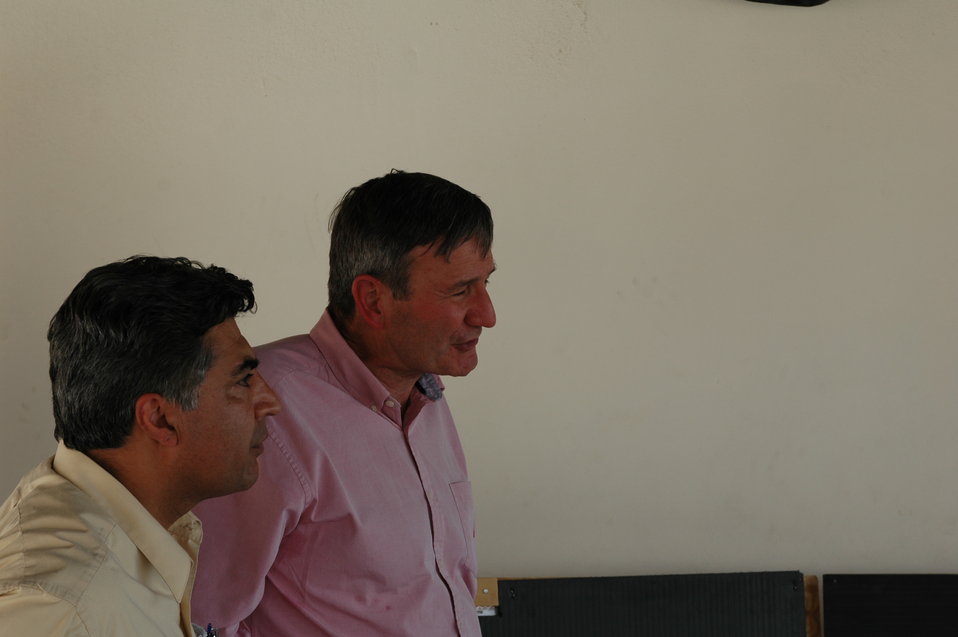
CODEL Berman